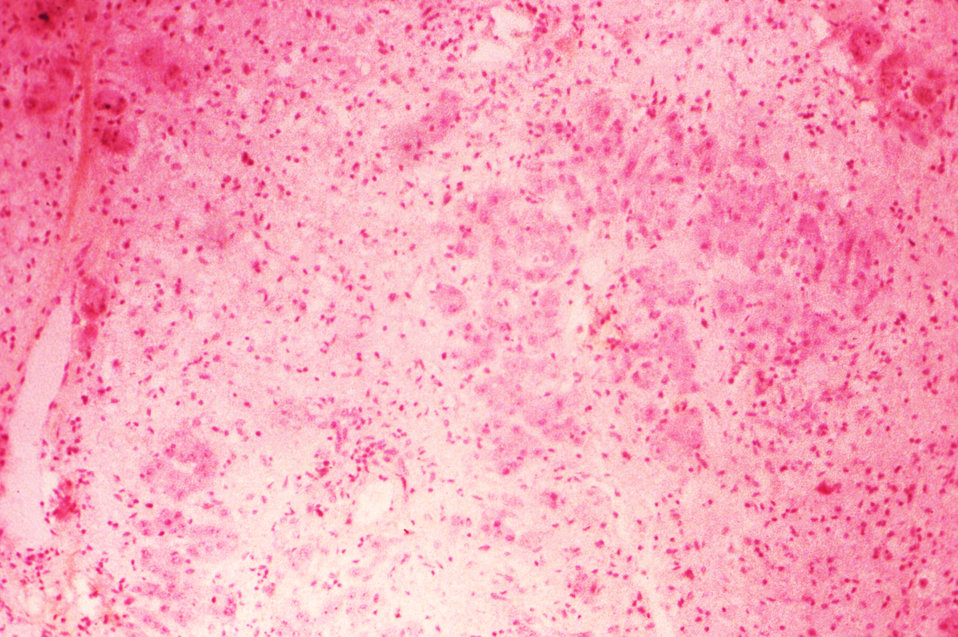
Under a magnification of 80X, this hematoxylin-eosin-stained (H&E) photomicrograph depicts the cytoarchitectural changes found in a liver tissue specimen extracted from a viral hepatitis patient. In this particular view, you'll note that there are some islets of intact parenchyma still visible in the midst of diffuse necrosis involving areas in the portal space and central vein. Also present, is a discrete lymphocytic infiltrate.